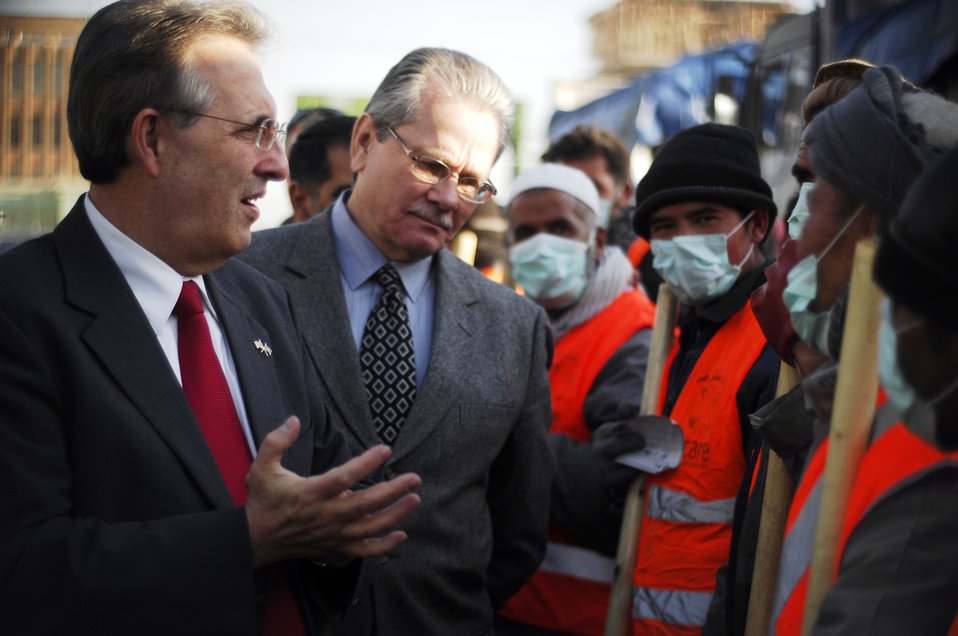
Care33